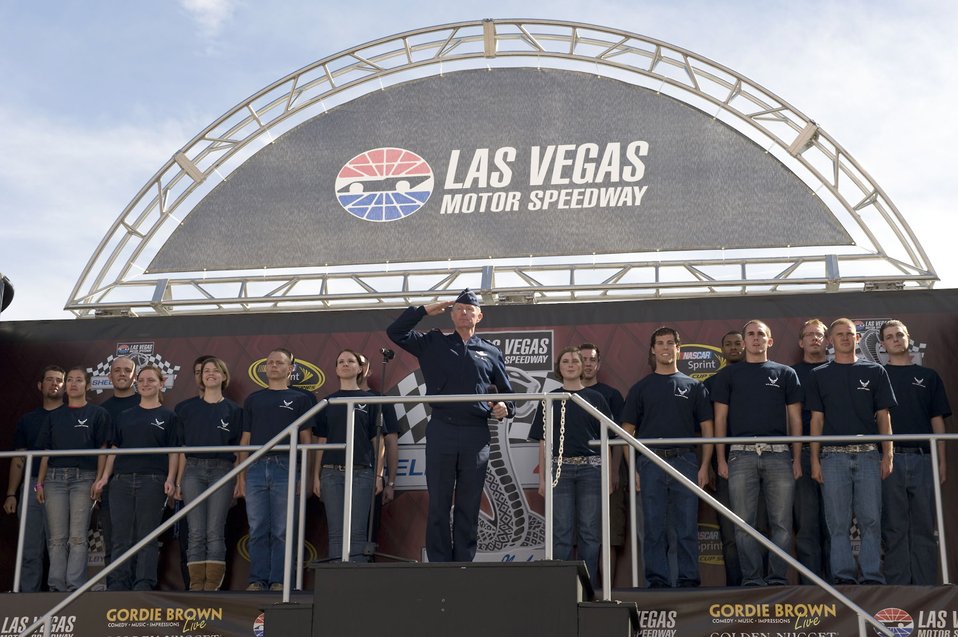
Air Force teams with NASCAR to aid recruiting

Lt. Gen. Ronald F. Sams salutes race fans attending the Shelby 427 race after administering the oath of enlistment to 19 Air Force recruits March 1 at Las Vegas Motor Speedway in Nevada. The recruits are part of the delayed enlistment program from the Las Vegas area. General Sams is the Air Force inspector general.